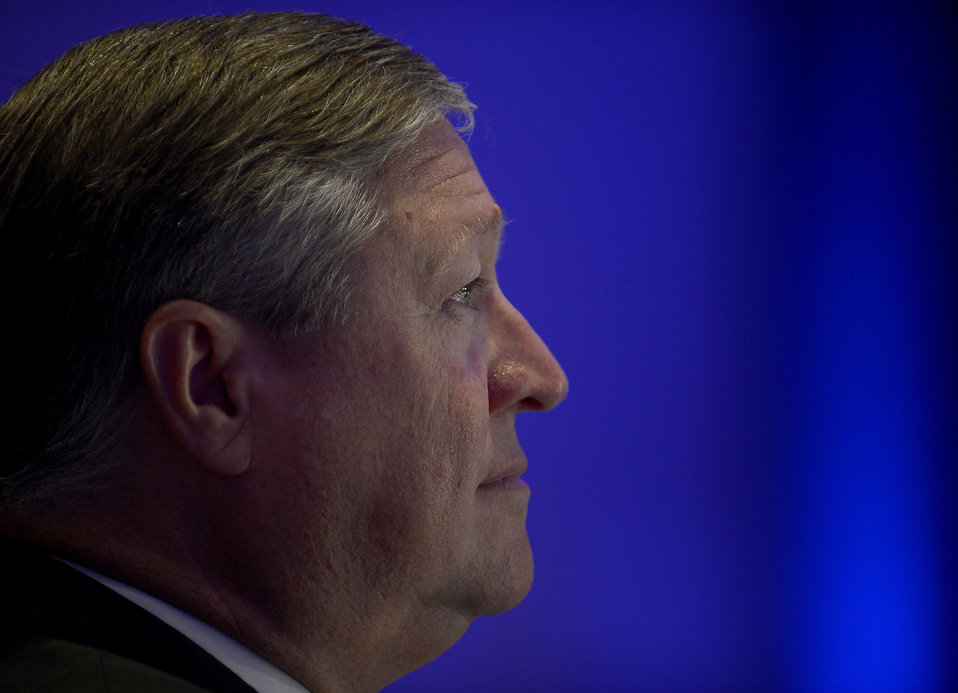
Donley talks sequestration, explains AF budget plans

Secretary of the Air Force Michael Donley discusses the service's budget strategy during his address at the Air Force Association's Air and Space Conference and Technology Exposition in Washington, D.C., Sept. 17, 2012.